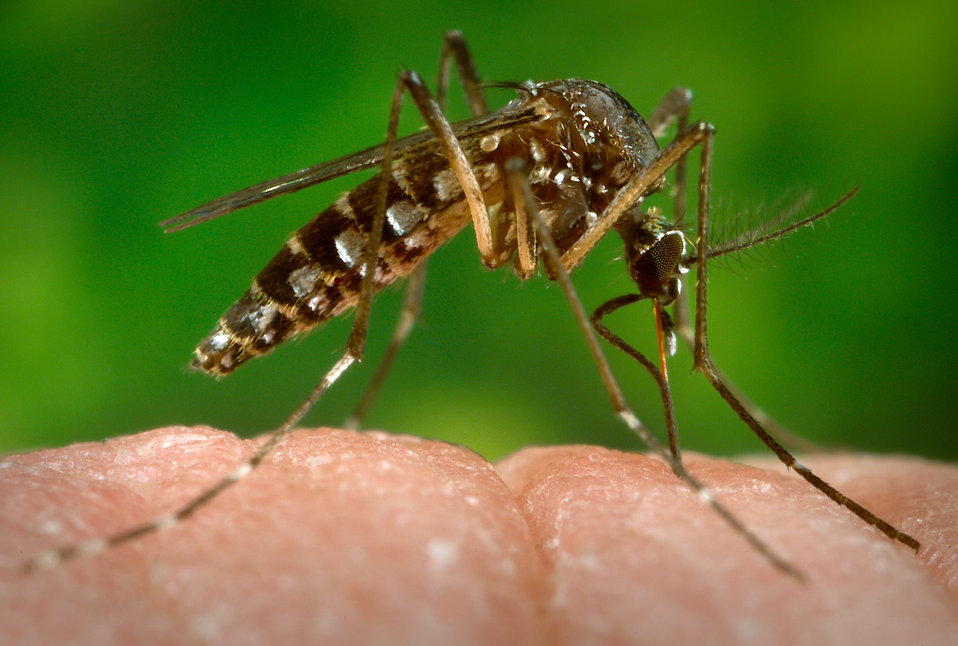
This 2006 photograph depicted a female Aedes aegypti mosquito as she was in the process of beginning the process of acquiring a blood meal from its human host, after having penetrated the skin surface with the sharply-pointed "fascicle". Normally, this female would be obtaining her blood from an unsuspecting host, but in this case, the CDC's biomedical photographer, James Gathany, had volunteered his own hand in order to entice the insect to alight, and feed. As it would fill with blood, the abdomen would become distended, thereby, stretching the exterior exoskeletal surface, thereby, causing it to become transparent, and allowing the collecting blood to become visible as an enlarging red mass. See PHIL # #8923, for this mosquito's appearance in its abdominally-distended state.